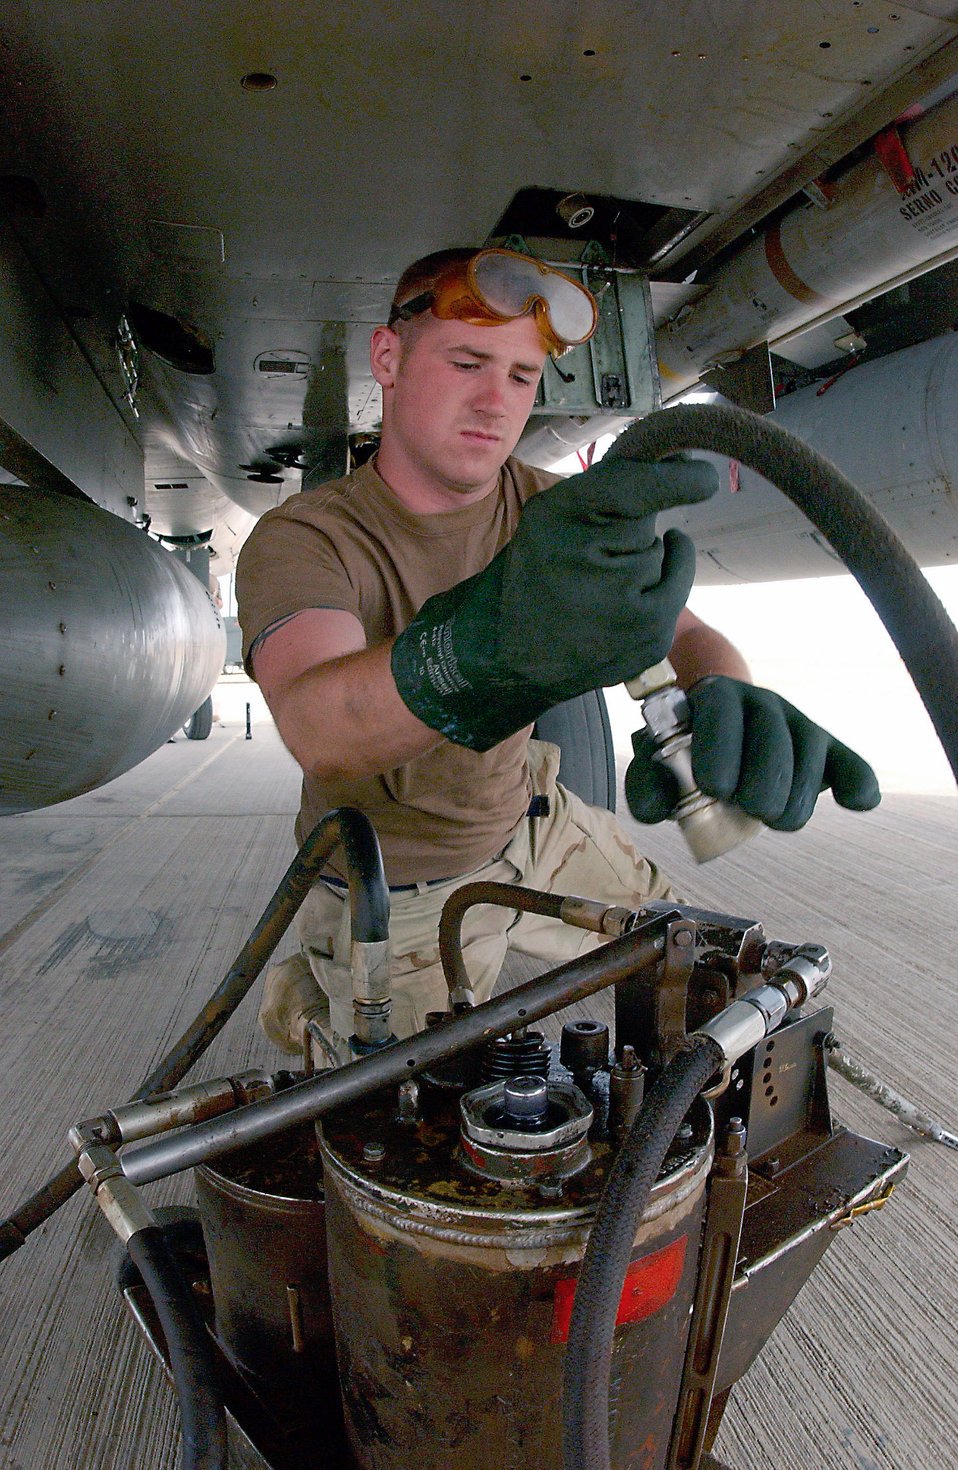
Eagle keeper

OPERATION IRAQI FREEDOM -- Senior Airman Roby Stephen of the 71st Aircraft Maintenance Unit readies the hose to pump oil into an F-15 Eagle's engines April 7. Stephen is deployed to a desert air base in Southwest Asia supporting Operation Iraqi Freedom.